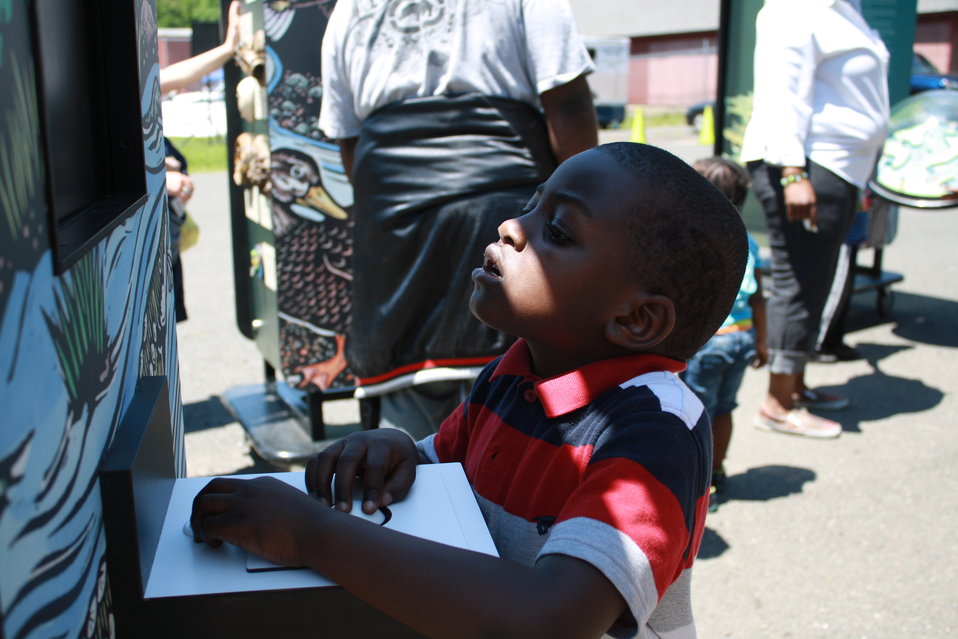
Child Playing with WOW Express

WOW Express at Keney Park in Hartford, Conn.